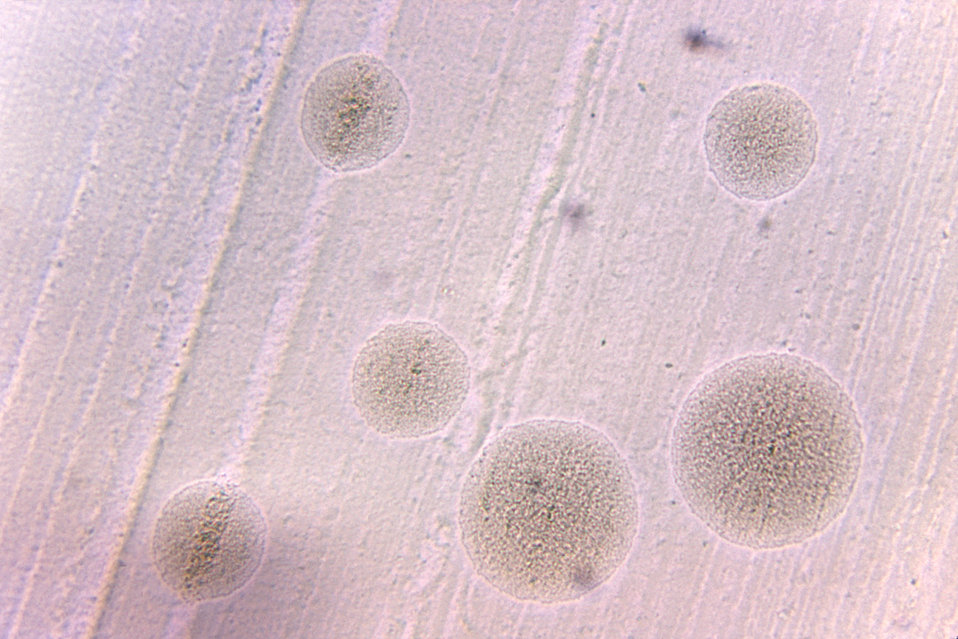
Cultivated for 18hrs on medium of brain heart infusion (BHI) agar, under a magnification of 125X, this photomicrograph revealed some of the ultrastructural morphology displayed by a number of Gram-positive Actinomyces sp. bacterial microcolonies. This was Strain 1454b, which exhibited the smooth colonial morphology when compared to PHIL 11971 depicting Strain 1454, with the rougher morphology.